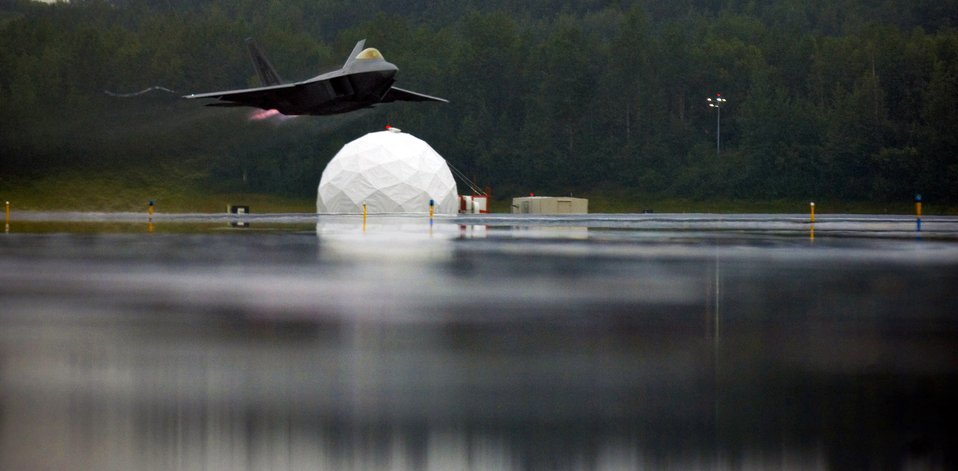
Air Force fighter squadron celebrates 90th year

The F-22A Raptor takes off with afterburners during a demonstration Aug. 20 at Elmendorf Air Force Base, Alaska. The demo was the closing event of the 90th Fighter Squadron's 90th anniversary. The aircraft was flown by Maj. Paul Moga, the Air Force's sole F-22 demonstration pilot. He is assigned to the 1st Operations Group at Langley AFB, Va.